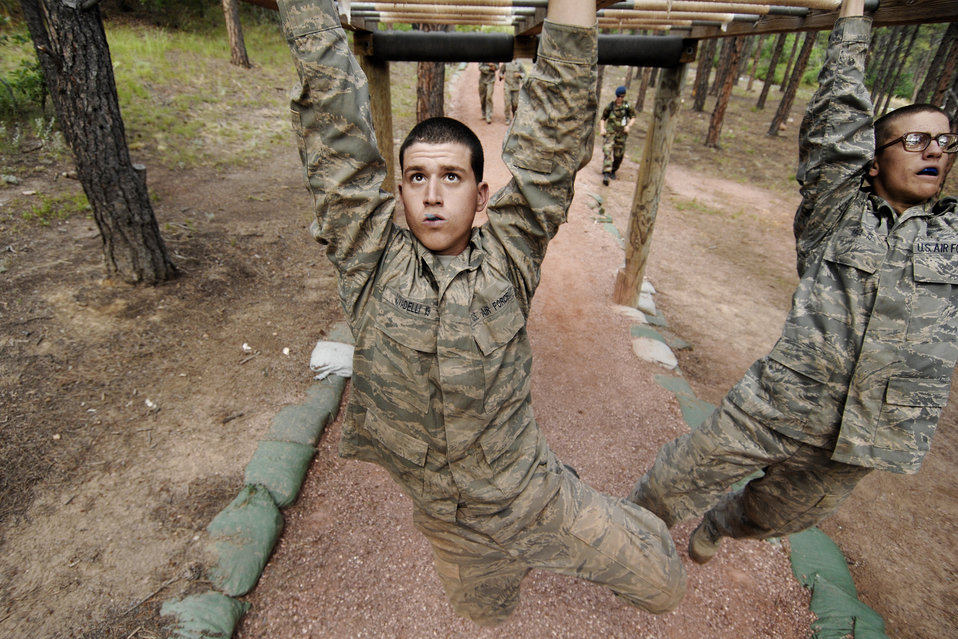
Academy basic field training at Jacks Valley

Air Force Academy Basic Cadets John Vivadelli and Jake Melia race through the monkey bars July 21 at the Jacks Valley Assault Course near Colorado Springs, Colo. Basic cadet training started June 25 and continues through Aug. 1.